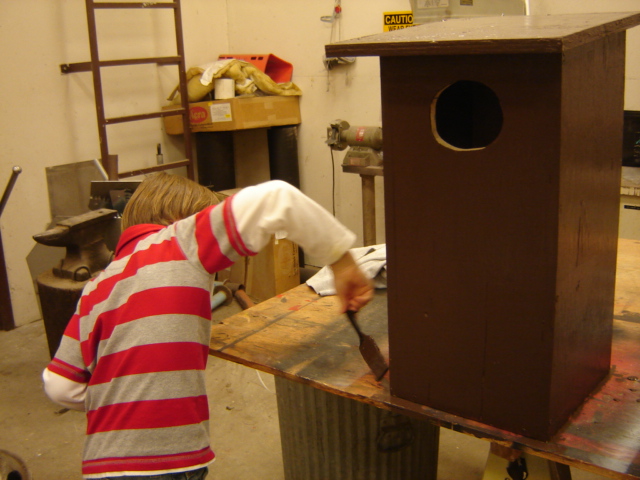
Painting a Bird House

A girl scout paints a bird house at Creston National Fish Hatchery in Montana as part of her efforts to earn a wildlife badge.